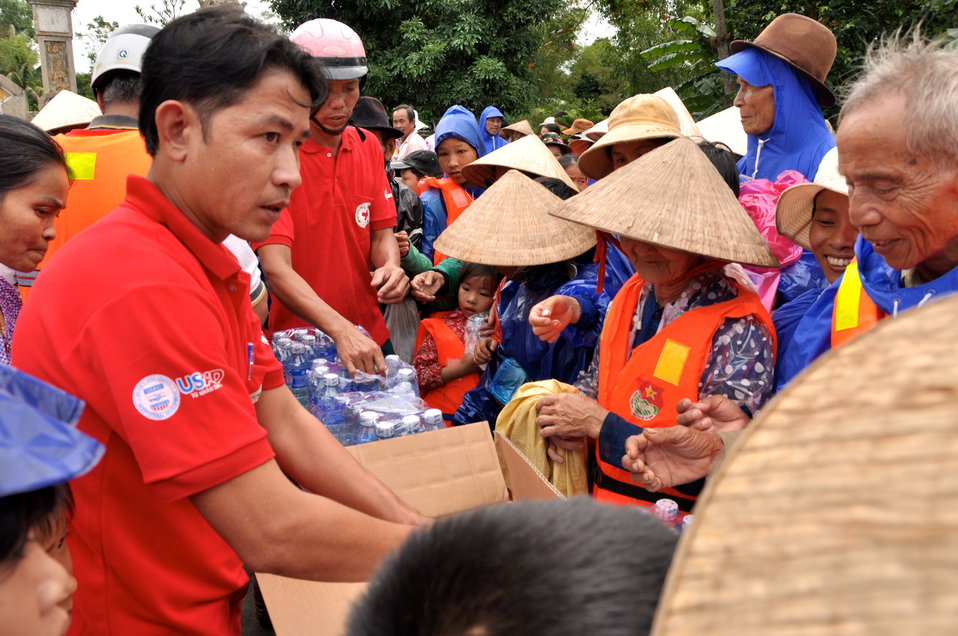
USAID and Save the Children support community evacuation drill and emergency preparedness in central Vietnam

Loc An Commune, Phu Loc District, Thua Thien Hue Province
December 4, 2012, Photo: Richard Nyberg, @USAIDVietnam